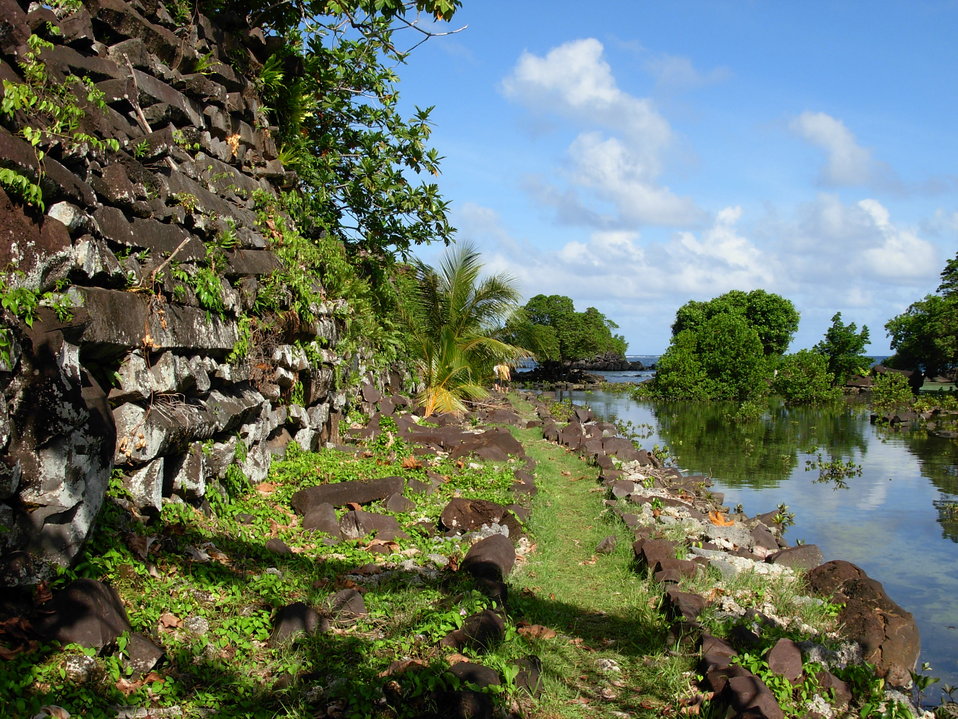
The volcanic 'log' city of Nan Madol.